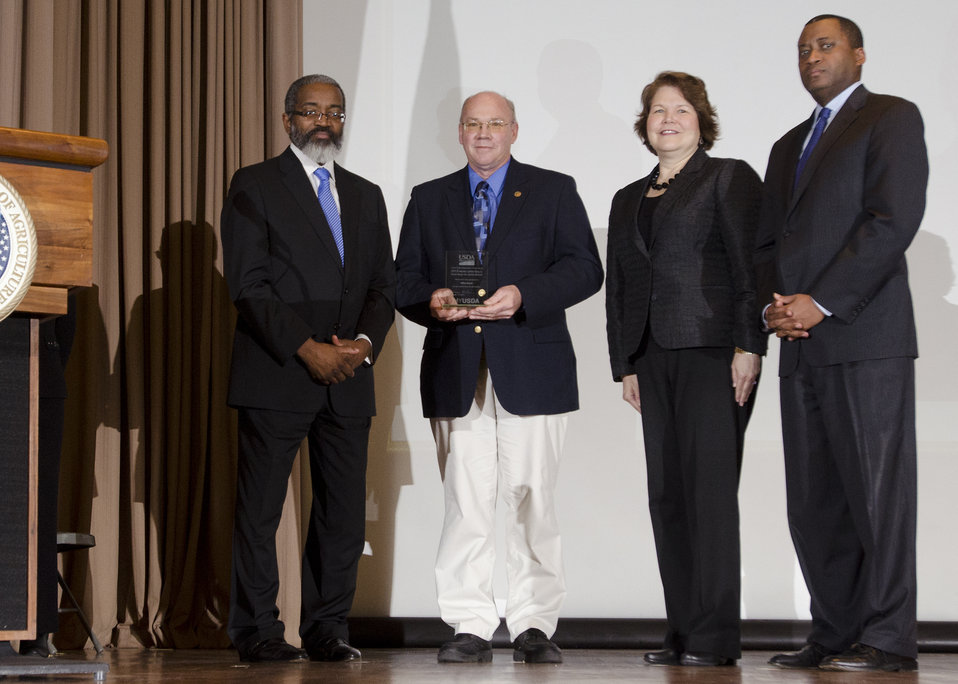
U.S. Department of Agriculture (USDA) Rural Development (RD) Appraiser from Tipton, IA Mike Boyle receives the Dr. Martin Luther King, Jr. National Service Day Drum Major Service Award at the Jefferson Auditorium in Washington, D.C. on Tuesday, Jan. 15, 2013 (L to R, USDA Animal and Plant Health Inspection Service (APHIS) Administrator Dr. Gregory Parham, Mike Boyle, Agriculture Rural Development (RD) Business and Cooperative Service Administrator Judith A. Canales, and Agriculture Assistant Secretary for Civil Rights Dr. Joe Leonard).